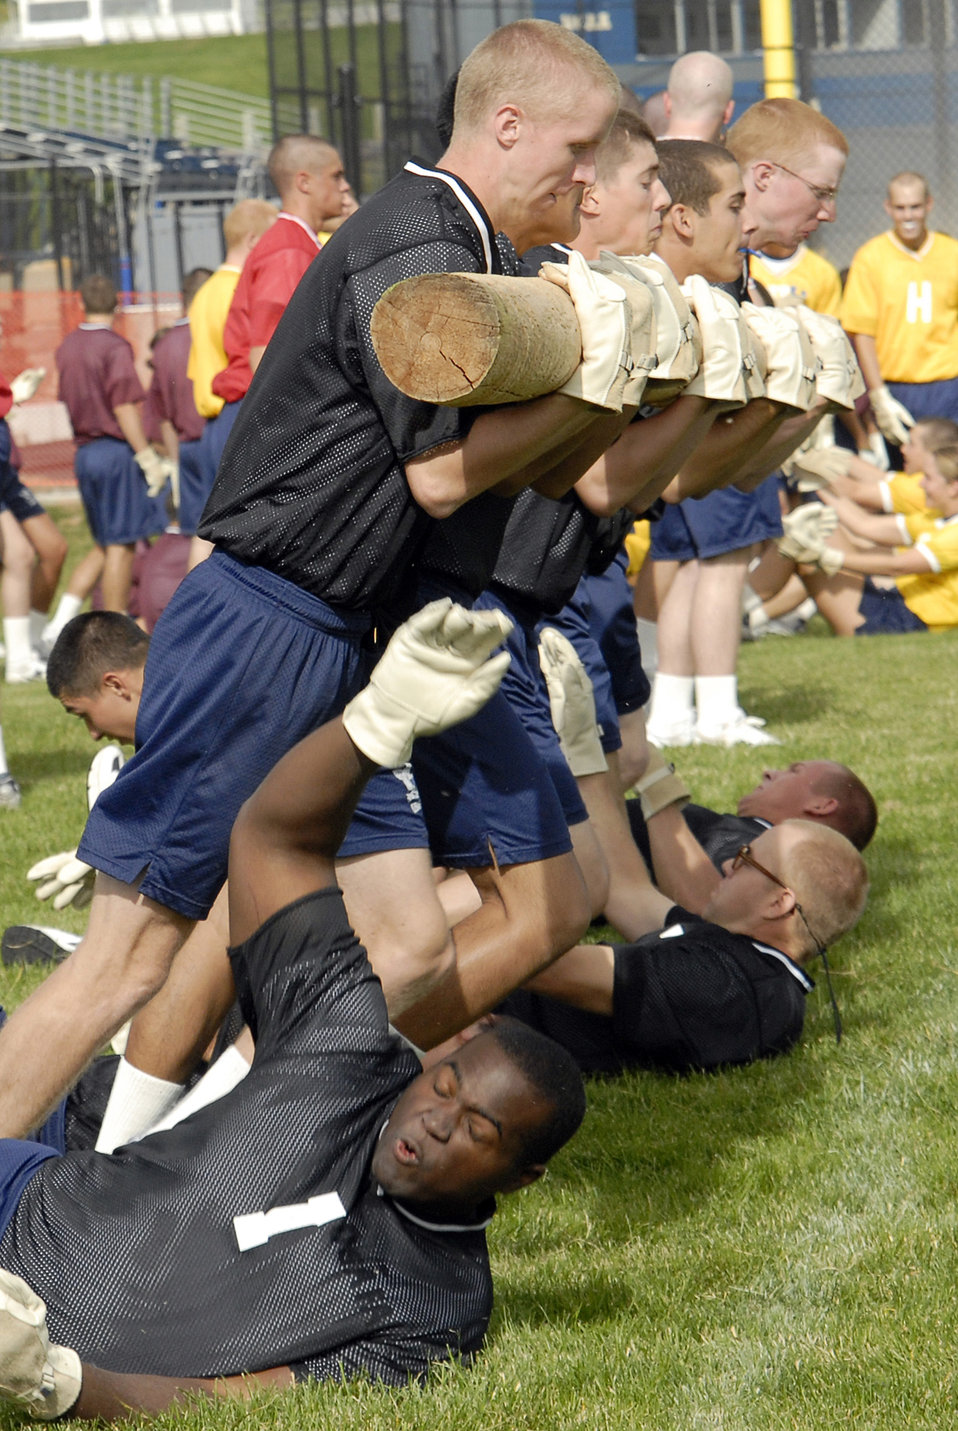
Class of 2013 Field Day

Basic cadet trainees with the U.S. Air Force Academy's Class of 2013 participate in the log relay during Field Day activities here today. About 1,344 trainees competed in various athletic events during Field Day, including tug
of war, log relays, steeple chase and sprint relays. Basic cadet training started June 25 and continues through Aug. 1. The new cadets are in their first month of training and are learning about Air Force heritage, honor, discipline and Air Force core values, in addition to improving physical
fitness. The fall academic semester begins Aug. 6.